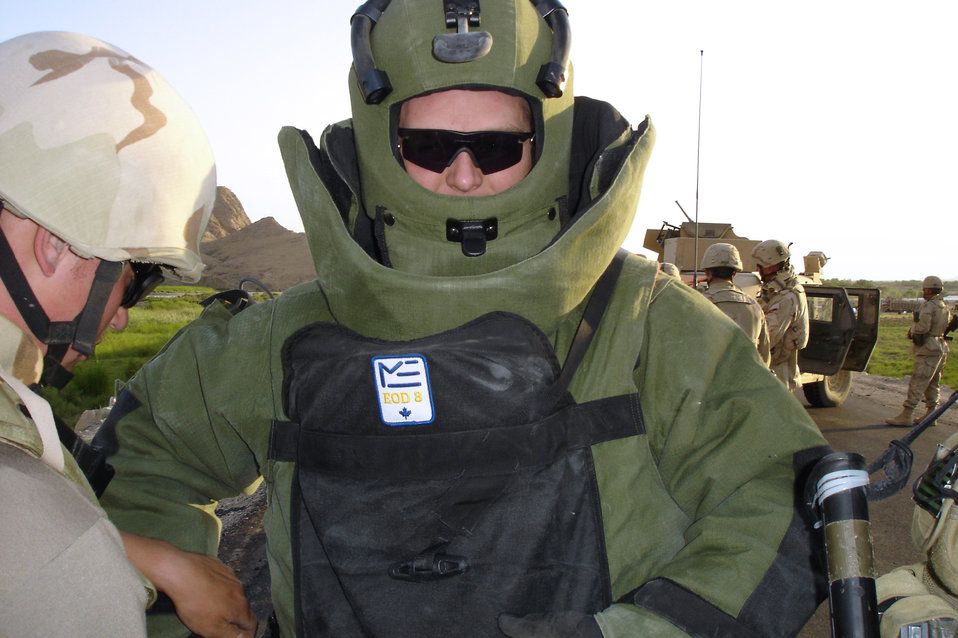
EOD Airmen work to keep Kandahar safe

KANDAHAR AIRFIELD, Afghanistan -- Staff Sgt. Dave Baker dons a bomb suit before investigation an explosive device in southern Afghanistan. Senior Airman Charles Hodge helps adjust the suit. The Airmen are assigned to the 451st Air Expeditionary Group's explosive ordnance disposal flight. Sergeant Baker is deployed from Kadena Air Base, Japan, and Airman Hodge is deployed from Luke Air Force Base, Ariz.